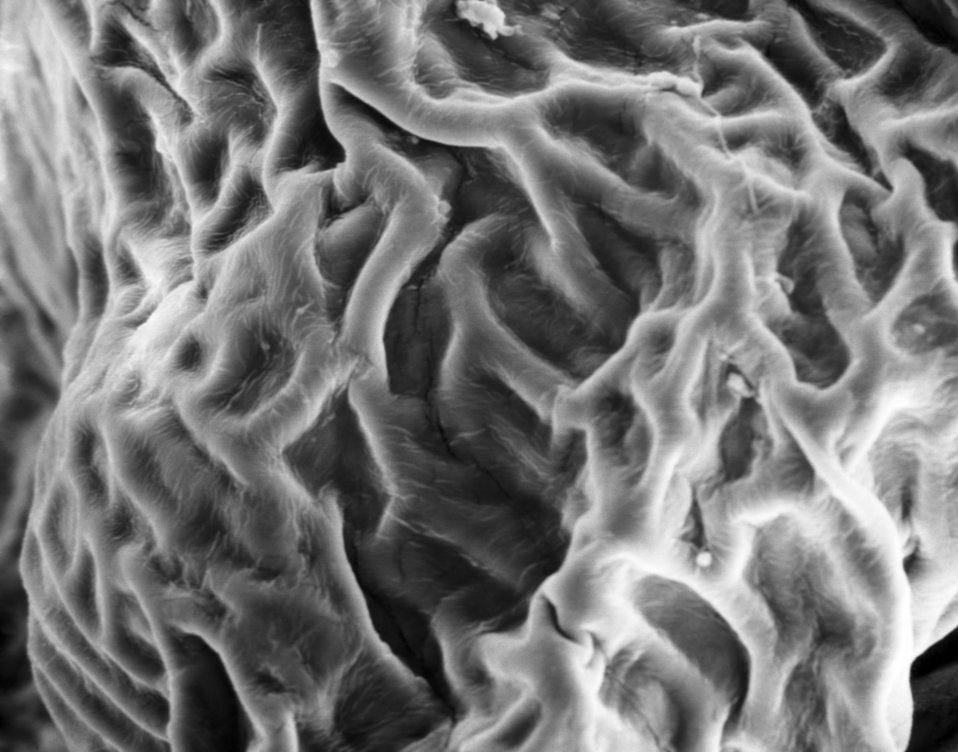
This electron micrograph reveals the textured surface of a blackberry, Rubus villosus.